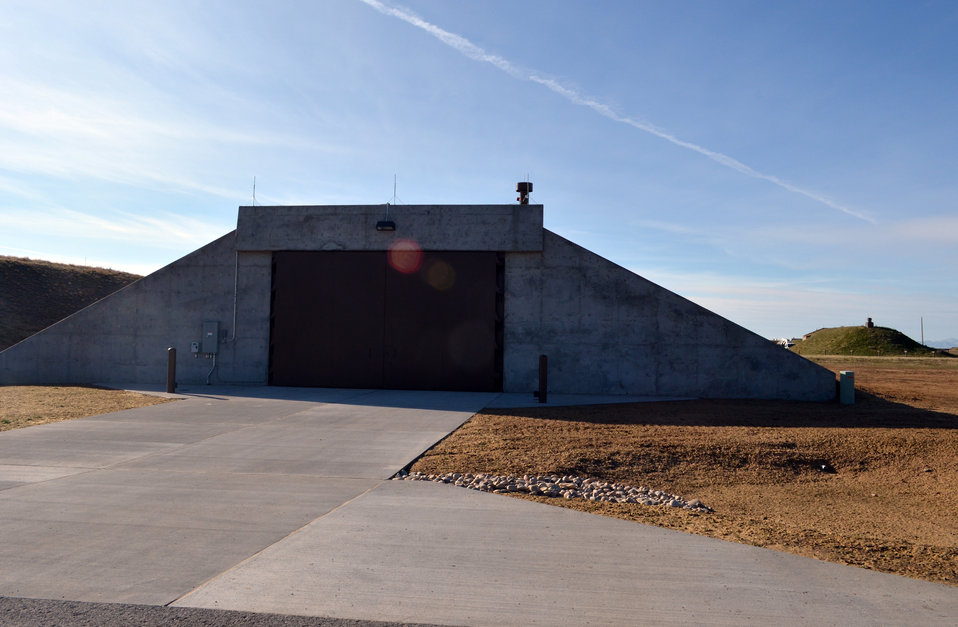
Corps completes new munitions storage module at Hill Air Force Base

A front view of the new, 26-by 80-foot, earth-covered munitions storage module at Hill Air Force Base, Utah, shown Nov. 16, 2011. The U.S. Army Corps of Engineers Sacramento District oversaw construction of the $964,000 building, which took five months to complete, from June to October 2011.